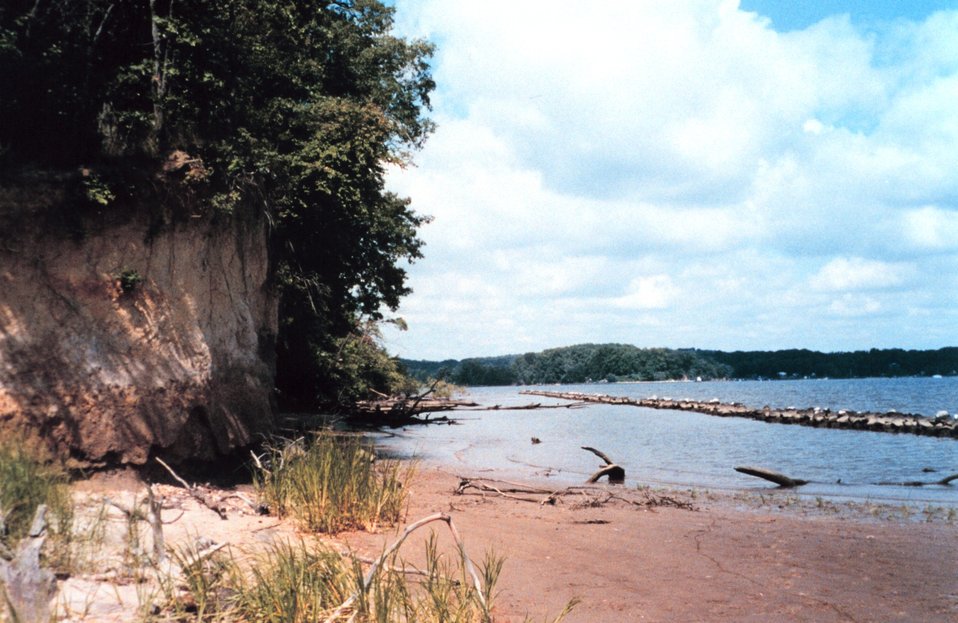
Efforts to preserve shoreline along the Severn River include installation of segmented jetties to diffuse wave energy.